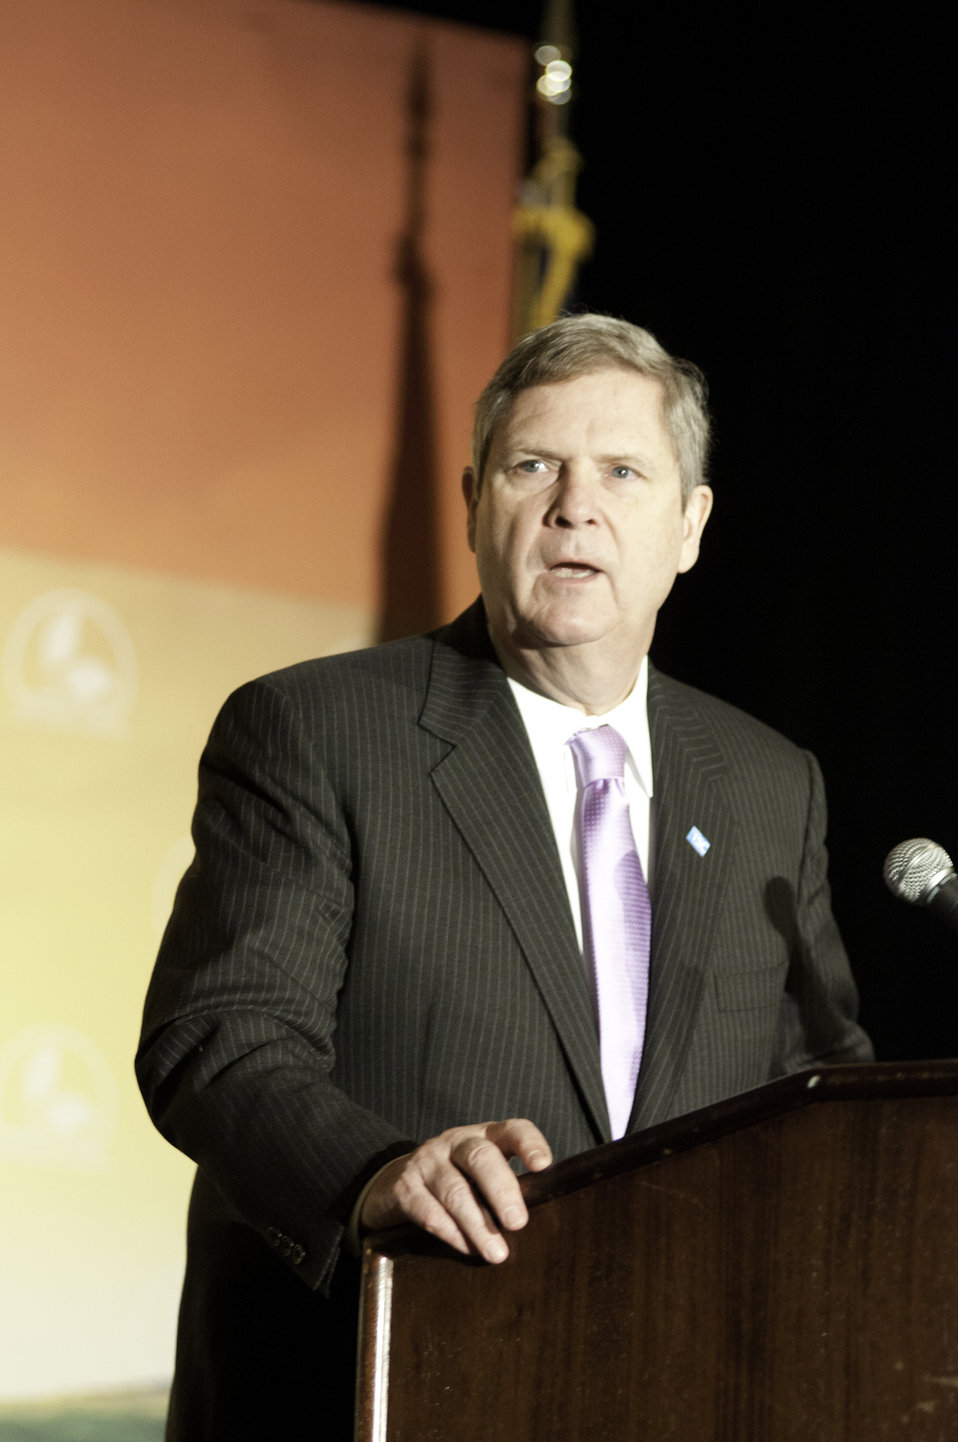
Agriculture Secretary Tom Vilsack makes remarks at the 2012 Agricultural Outlook Forum, “Moving Agriculture Forward” in Arlington, VA. On Thursday, February 23, 2012.